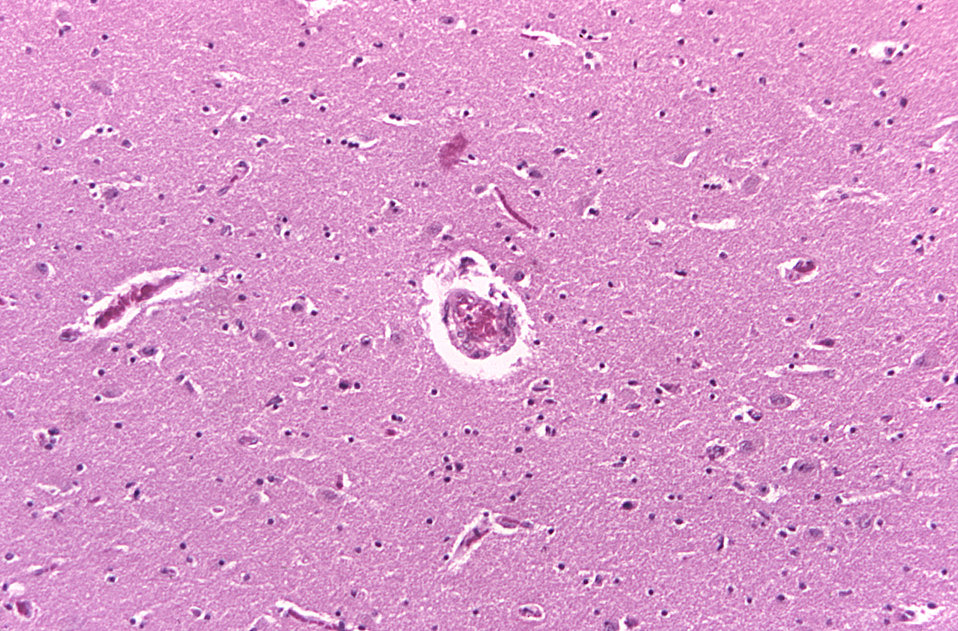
Under a relatively-low magnification of 125X, this photomicrograph of a brain tissue sample revealed some of the histopathologic changes associated with a tissue reation due to the presence of the fungus, Bipolaris hawaiiensis, formerly known as Drechslera hawaiiensis.